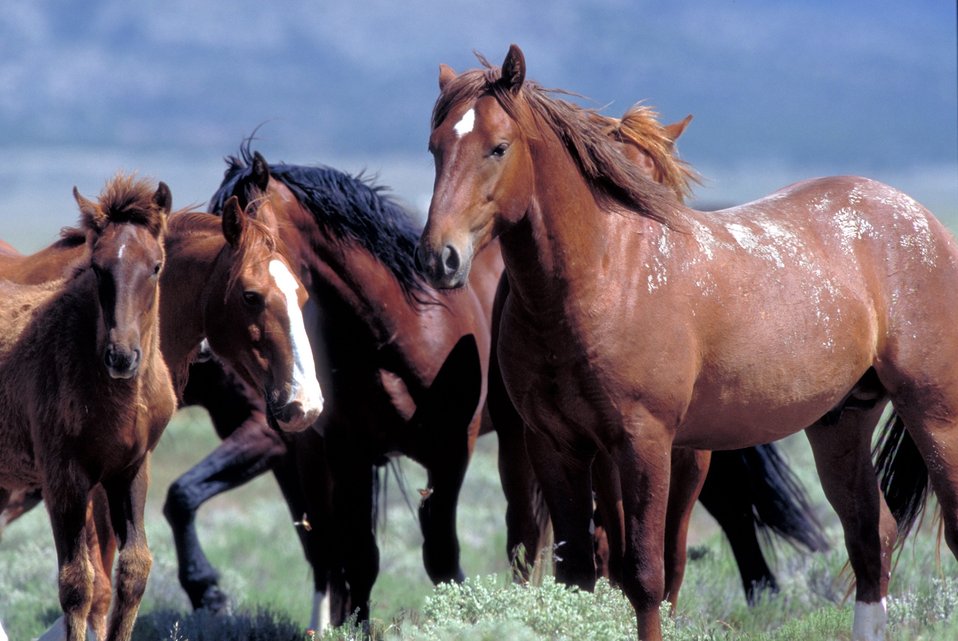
Onaqui Herd near Dugway, Utah.